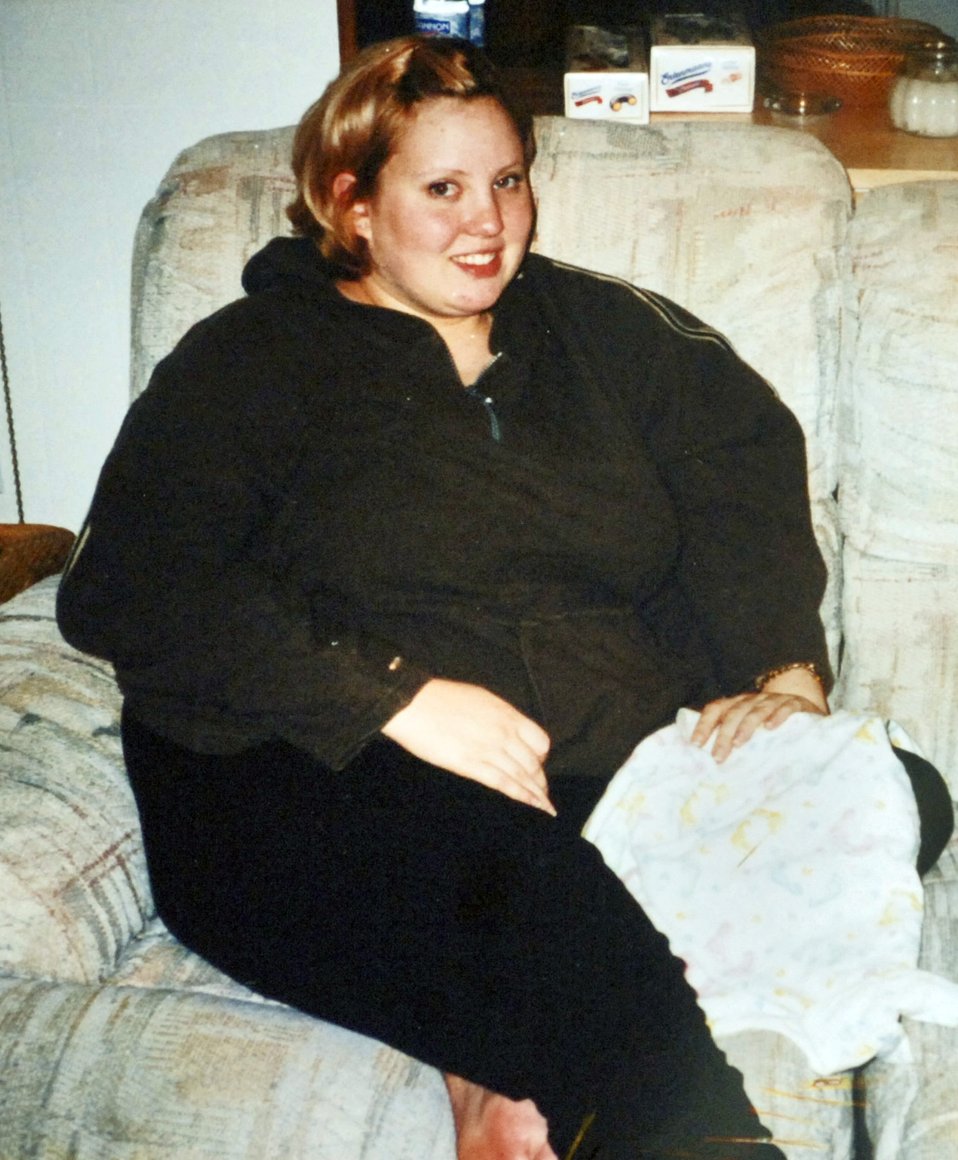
Yoga fitness

Balad Air Base, Iraq (AFPN) -- Staff Sgt. Bonnie McKinley's